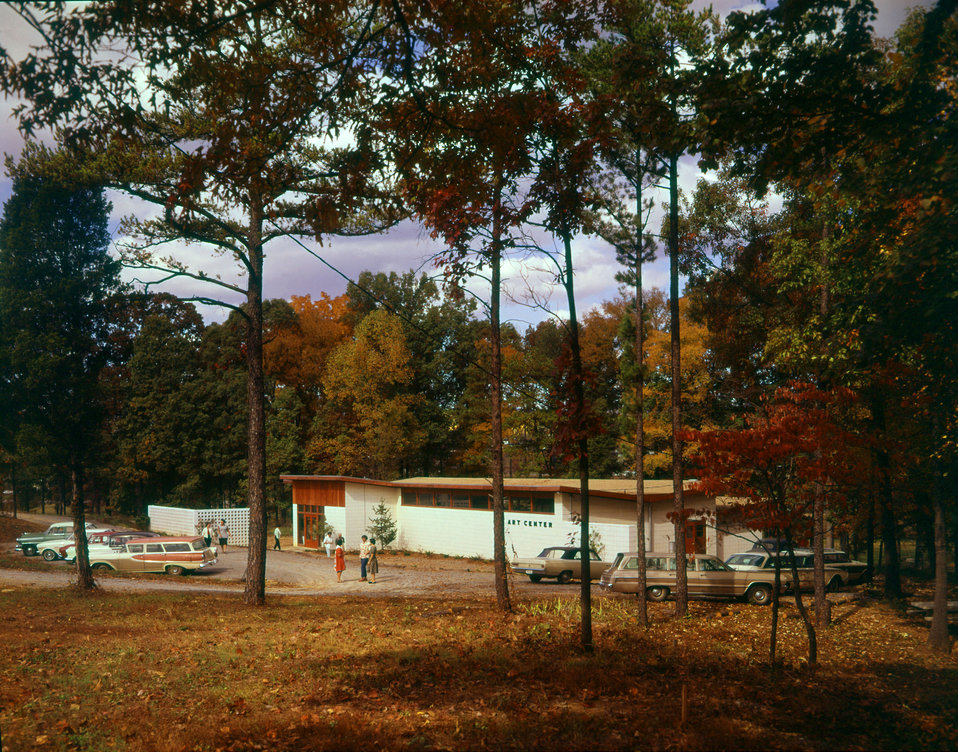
Oak Ridge Art Center

DOE photo Ed Westcott 1960s
Oak Ridge Tennessee